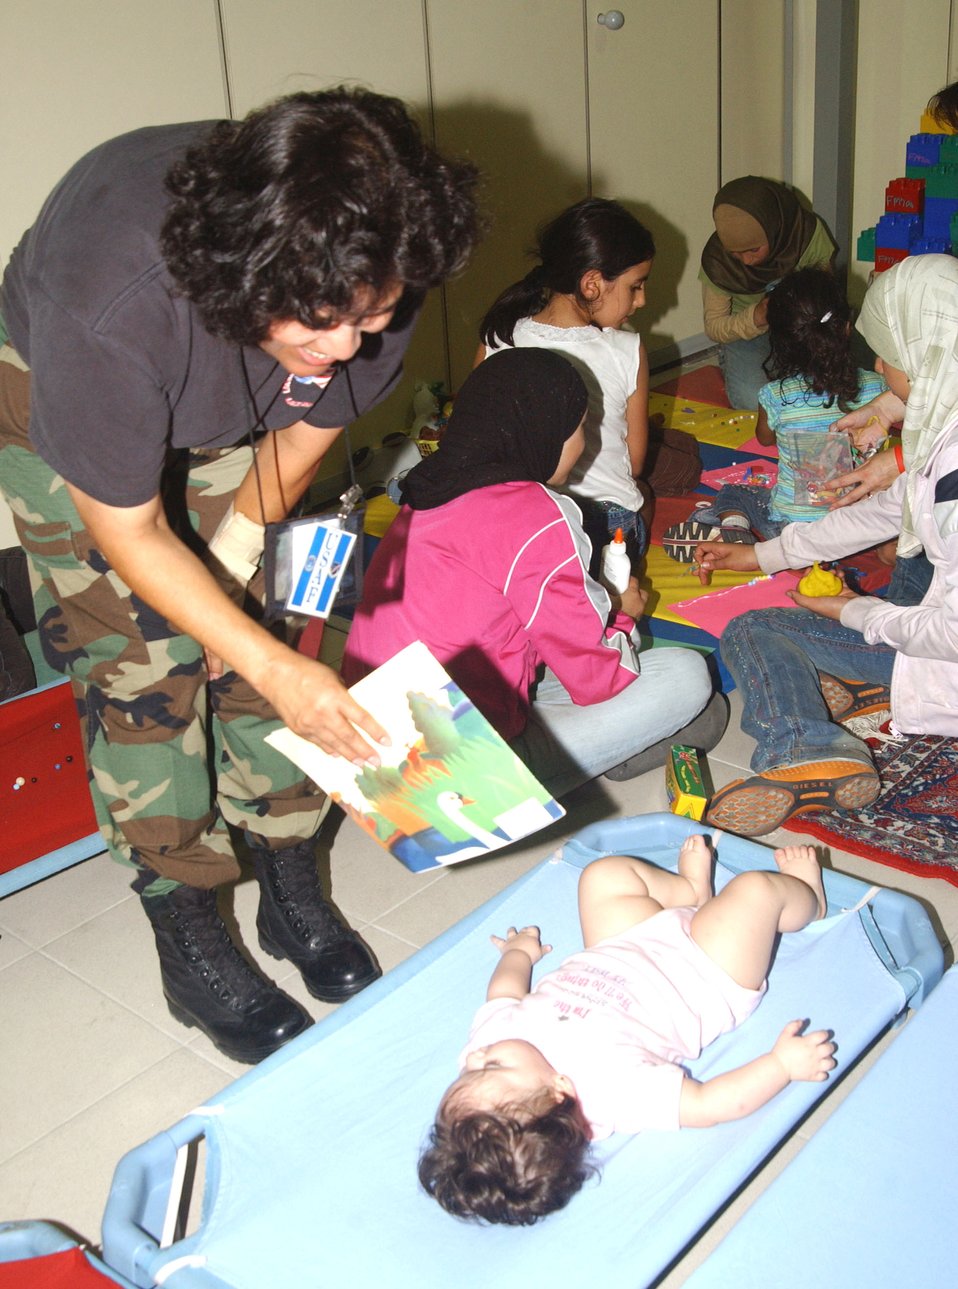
Incirlik continues helping Americans leaving Lebanon

An Airman from the 39th Air Base Wing visits with one of the younger visitors at Incirlik Air Base, Turkey, on July 24. Airmen at Incirlik are providing assistance to Americans arriving at Incirlik following their decision to leave Lebanon.